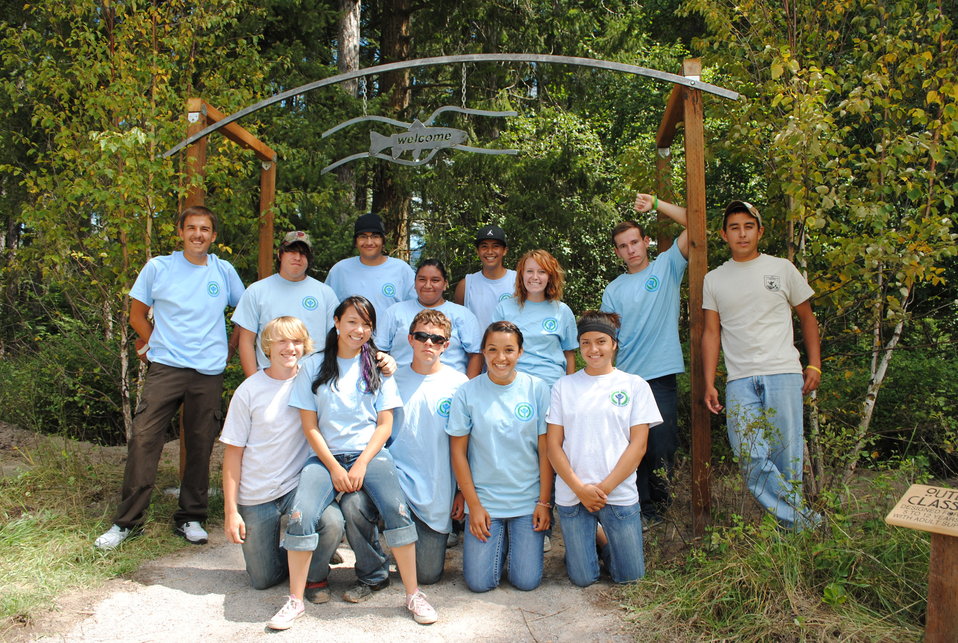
Creston National Fish Hatchey Outdoor Classroom Project

Montana Tribal Youth Conservation Corps (YCC)
Nature Explore Outdoor Classroom Project, a collaborative project of Arbor Day Foundation and Dimensions Educational Research Foundation

Last Day of Work at the Creston Fish Hatchery for the Montana Tribal YCC Students

top left: Eli Sheraton (youth supervisor), Shawn Matt, Chris Camel, Trisha Laffert, Zac Tapia, Alexis Paul,
far right: Austin Moran ( youth supervisor), Stephanie McDonald, Monica Cleveland, Kyle Couture, Emily McCrea, Nick Adamson

Confederated Salish and Kootenai Tribes working with the USFWS - Creston National Fish Hatchery, together they sponsor the Youth Conservation Corps (YCC) program. This is the third year for this successful program. The YCC program helps to provide job experiences that will enhace furture employment. This eight week program has projects that cover areas on the Flathead Indinan Reservation, National Bison Range, and Creston National Fish Hatchery.

Evie Bradley/USFWS